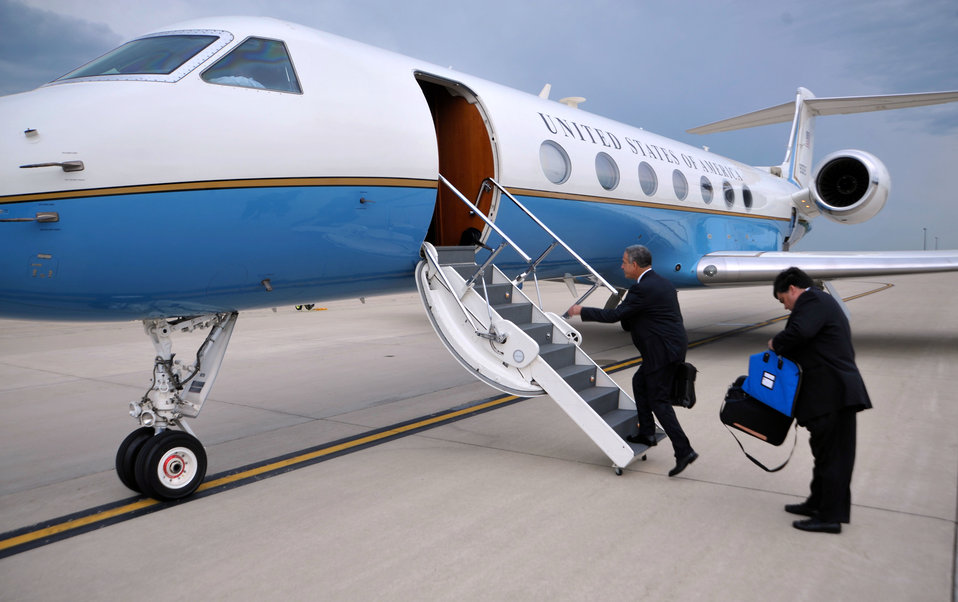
Great Lakes Special Envoy Feingold Boards the Plane

Former U.S. Senator Russell Feingold, newly appointed as Special Envoy for Africa's Great Lakes Region, boards a U.S. Air Force jet at Andrews Air Force Base in Maryland before accompanying U.S. Secretary of State John Kerry at meetings at the United Nations in New York City on July 25, 2013.